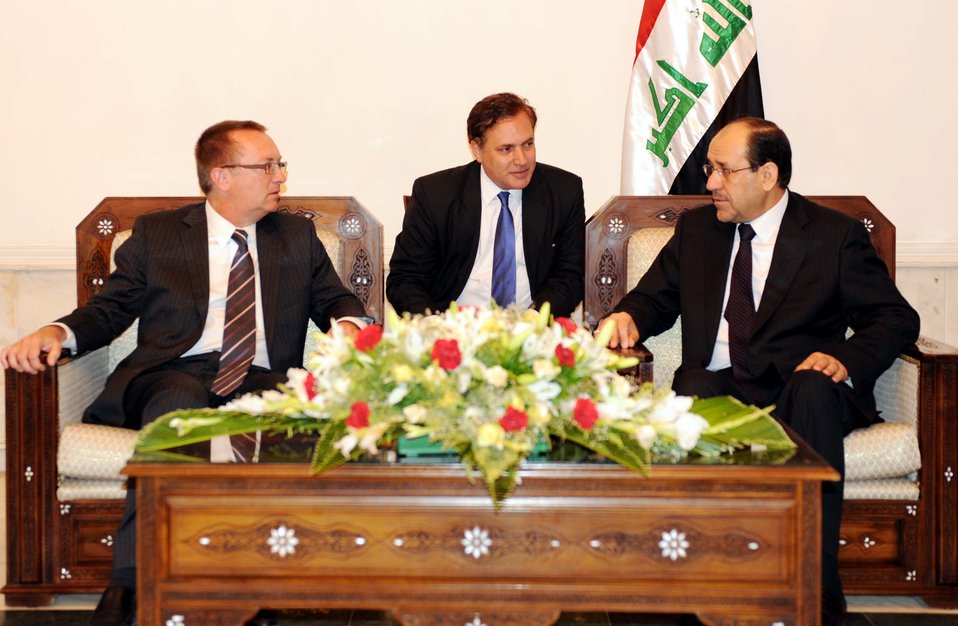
Assistant Secretary for Near Eastern Affairs Jeffrey Feltman meets with Iraqi Prime Minister Noori Al Maliki in Iraq on August 14, 2010.